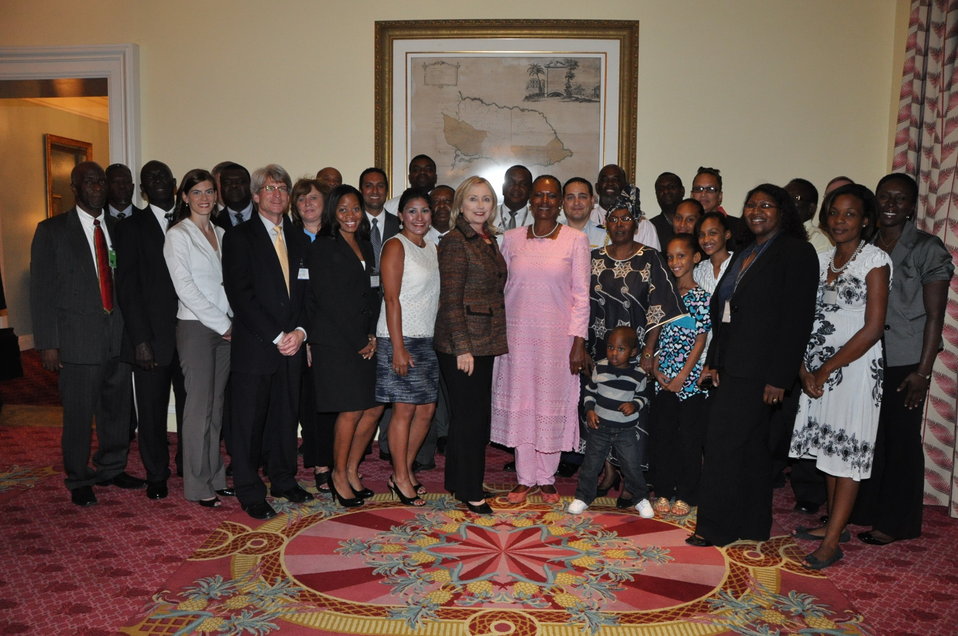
Secretary Clinton Meets With Embassy Jamaica Staff

U.S. Secretary of State Hillary Rodham Clinton meets with Embassy Jamaica staff, including U.S. Ambassador to Jamaica Pamela Bridgewater, in Montego Bay, Jamaica, on June 22, 2011.